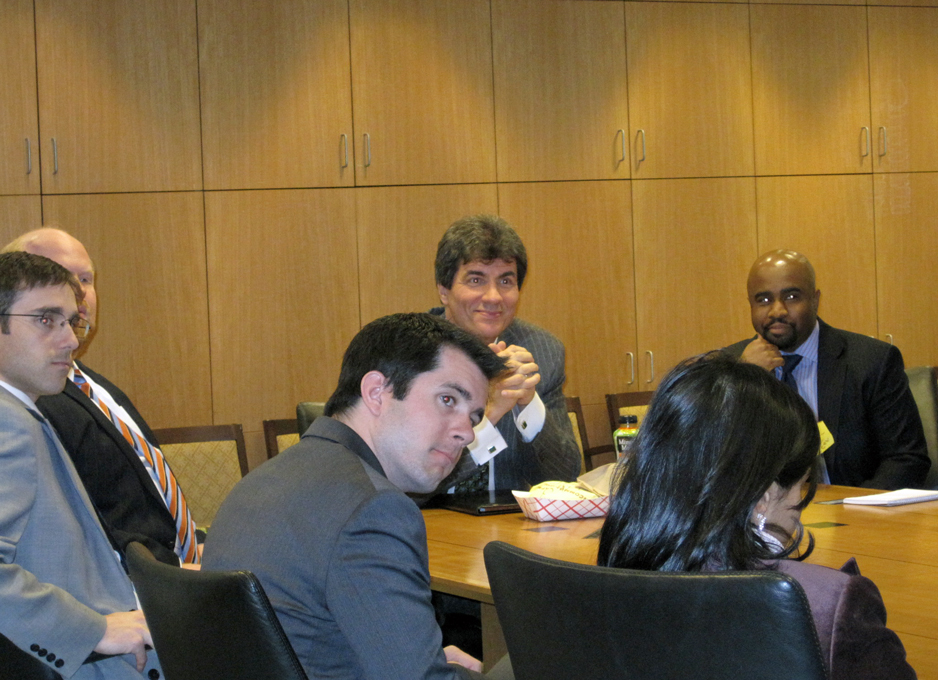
Assistant Secretary Fernandez Hosts the Leadership Day Brown Bag Lunch

Assistant Secretary of State for Energy, Economic and Business Affairs Jose Fernandez hosts the Leadership Day Brown Bag Lunch with new economic foreign service officers, at the U.S. Department of State in Washington, D.C., on March 29, 2011.